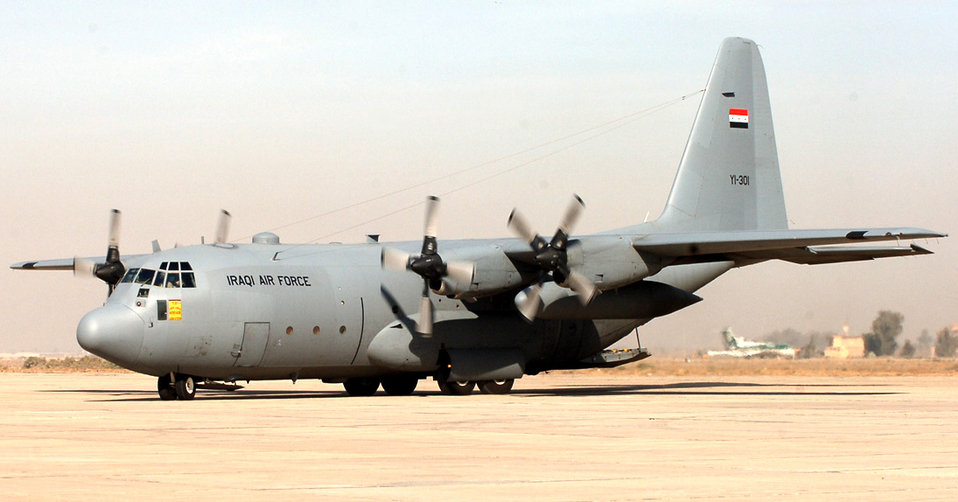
Iraqi AF flies solo

BAGHDAD, Iraq (AFPN) -- An Iraqi C-130 Hercules arrives here at New Al Muthana. It was the first mission flown by an all Iraqi aircrew.